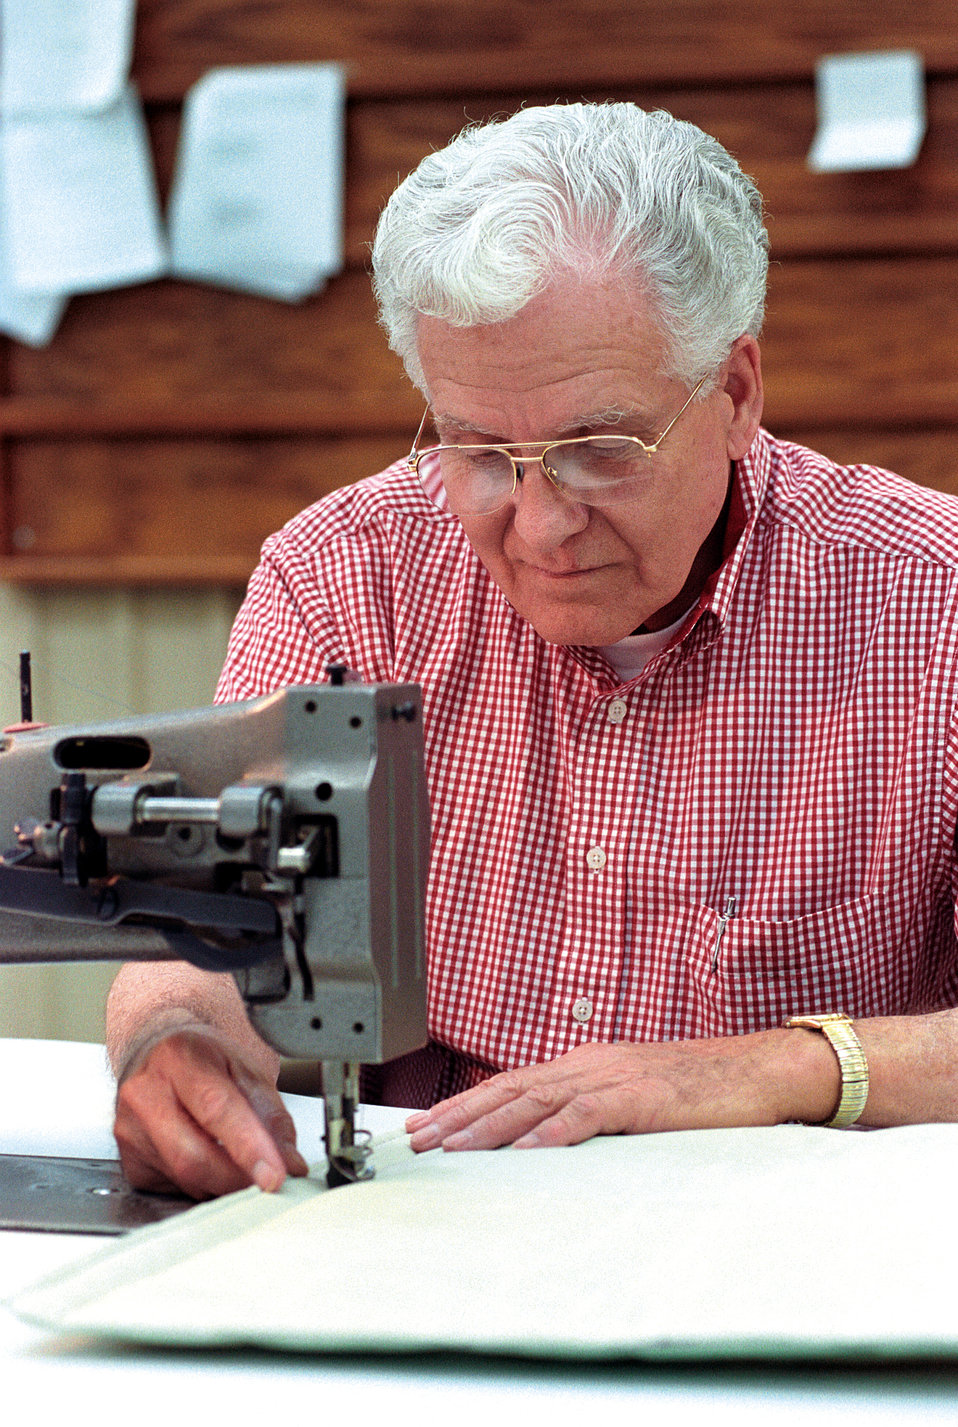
Still happily working

TINKER AIR FORCE BASE, Okla. -- Paul Barber sews aircraft panels during his temporary assignment to the textile and life support unit. After 50 years of Air Force service, first in uniform then as a civilian, Barber still loves working every day.